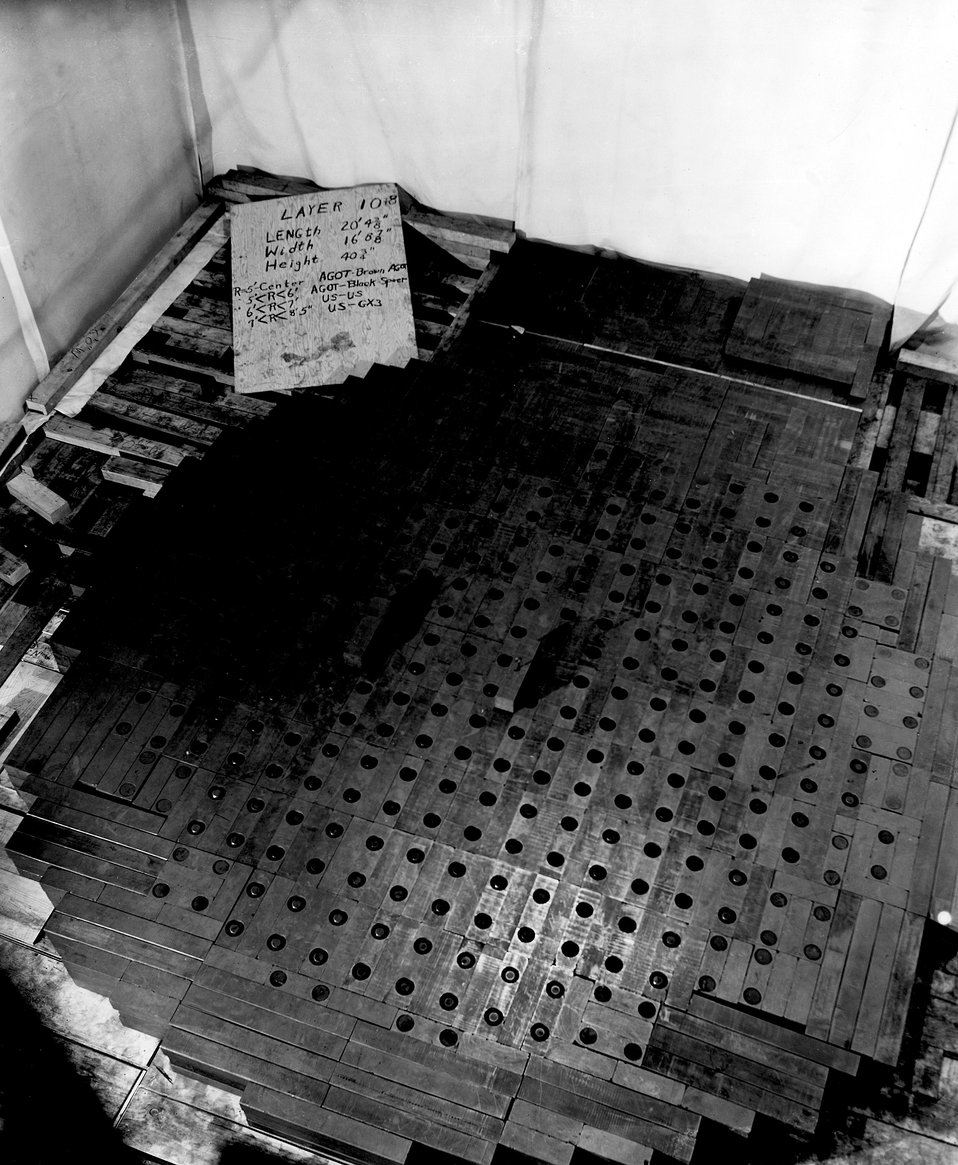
The world's first nuclear reactor during assembly in the squash court under the West Stands of Stagg Field...